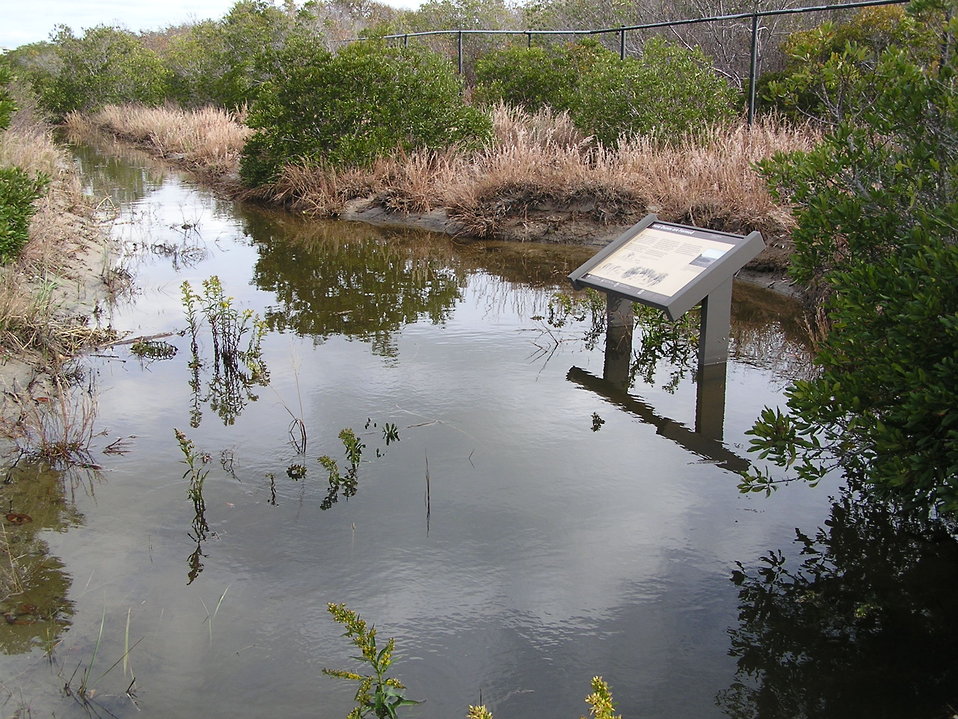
Hurricane Sandy damaged Cape May National Wildlife Refuge (NJ)

More than 75 percent of North Dune Trail at Cape May National Wildlife Refuge's Two Mile Beach unit is underwater (some areas knee-deep).